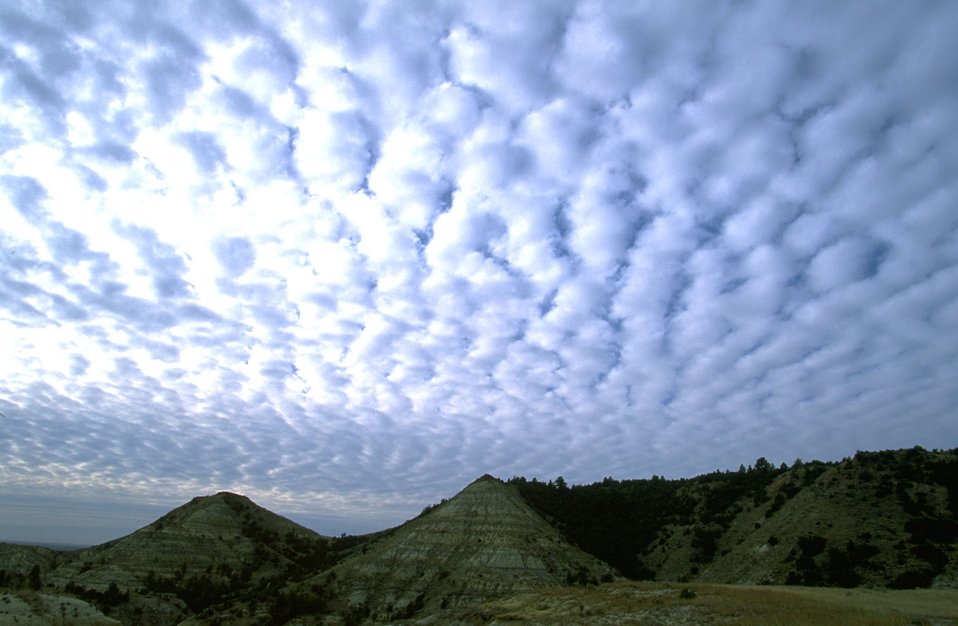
Unusual cloud formations above the Terry Badlands